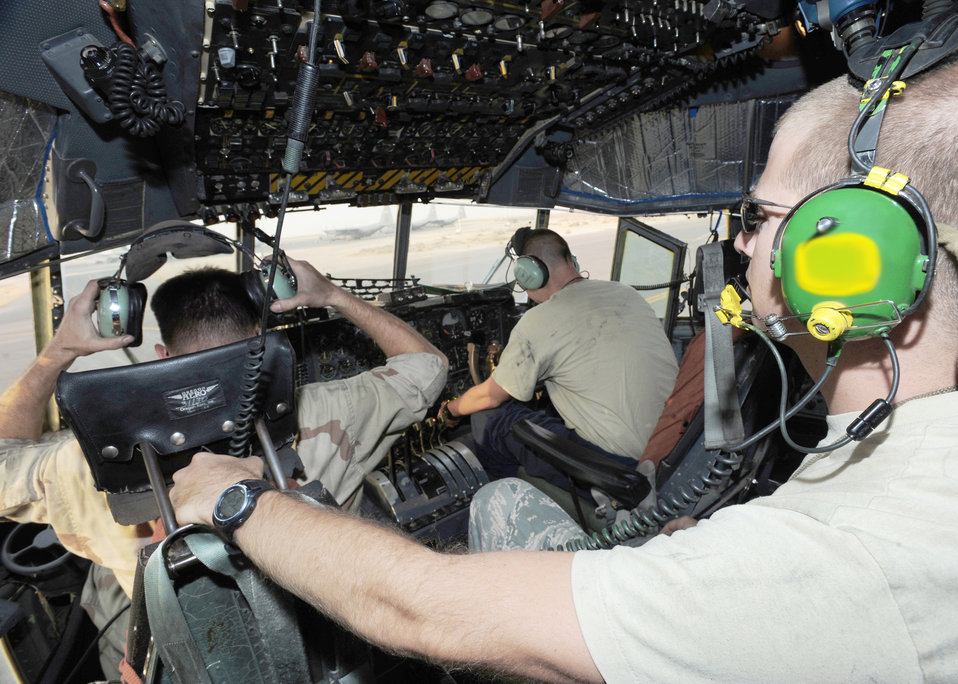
C-130E electronic attack maintenance

Staff Sgt. William Aker, Squadron (left), Tech. Sgt. Christopher Chadwell (center) and Staff Sgt. Anthony Anderson (right) prepare for a max-power engine run on a C-130E Hercules Aug. 11, 2010, at an air base in Southwest Asia. Sergeant Aker is a flying crew chief and Sergeants Chadwell and Anderson are aerospace propulsion craftsmen assigned to the 386th Expeditionary Aircraft Maintenance Squadron.